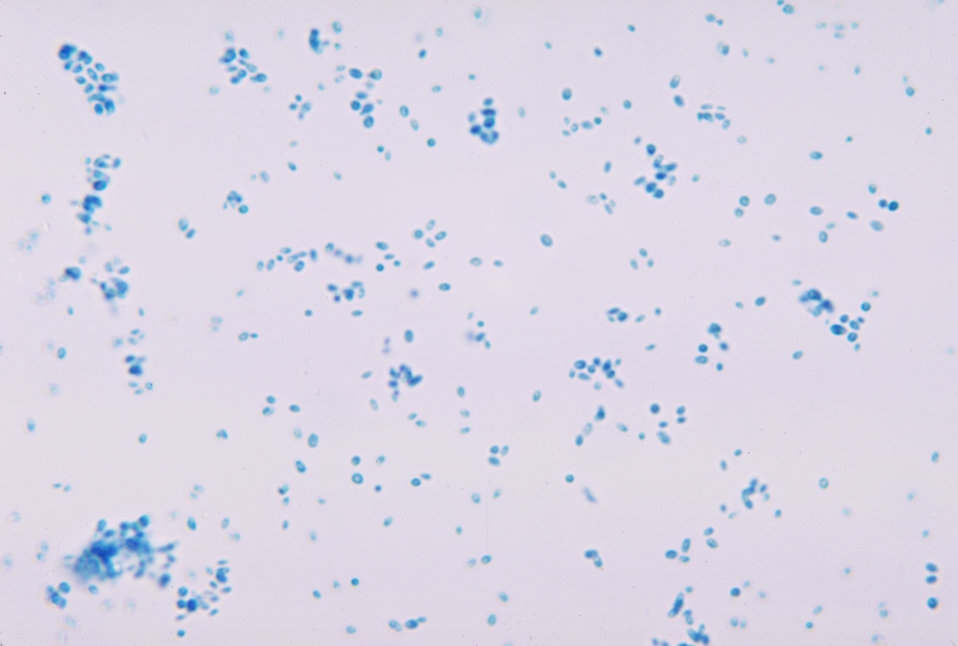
This photomicrograph depicts the fungus Candida glabrata, formerly Torulopsis glabrata.